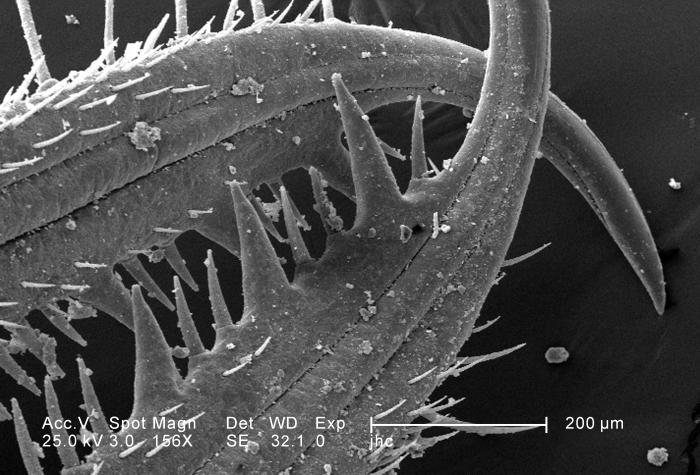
Under a relatively-low magnification of 156X, twice that of PHIL 11804, this scanning electron micrograph (SEM) revealed the ultrastructural features found on the ventral exoskeletal surface of this larval-staged antlion's mandibles. This larva is sometimes referred to as a 'doodlebug', because of the trails it leaves in the soft sand as it hunts for prey. This arthropod, i.e., jointed legs, undergoes dramatic morphologic changes when it metamorphoses into a beautiful flying antlion lacewing.